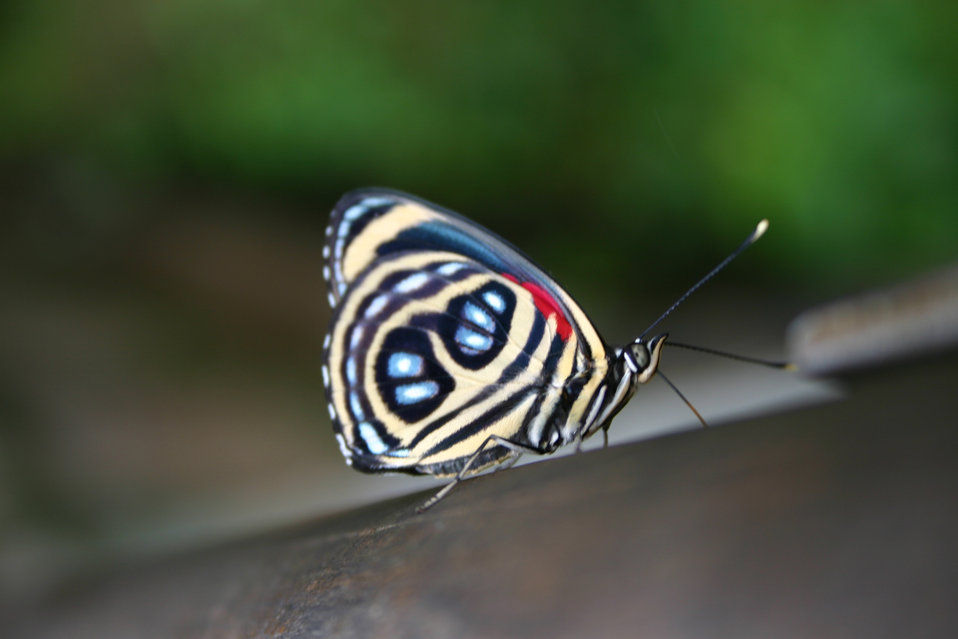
Godart's Numberwing (Callicore pygas) photographed in the national park of en:Foz do Iguaçu, en:Brazil.